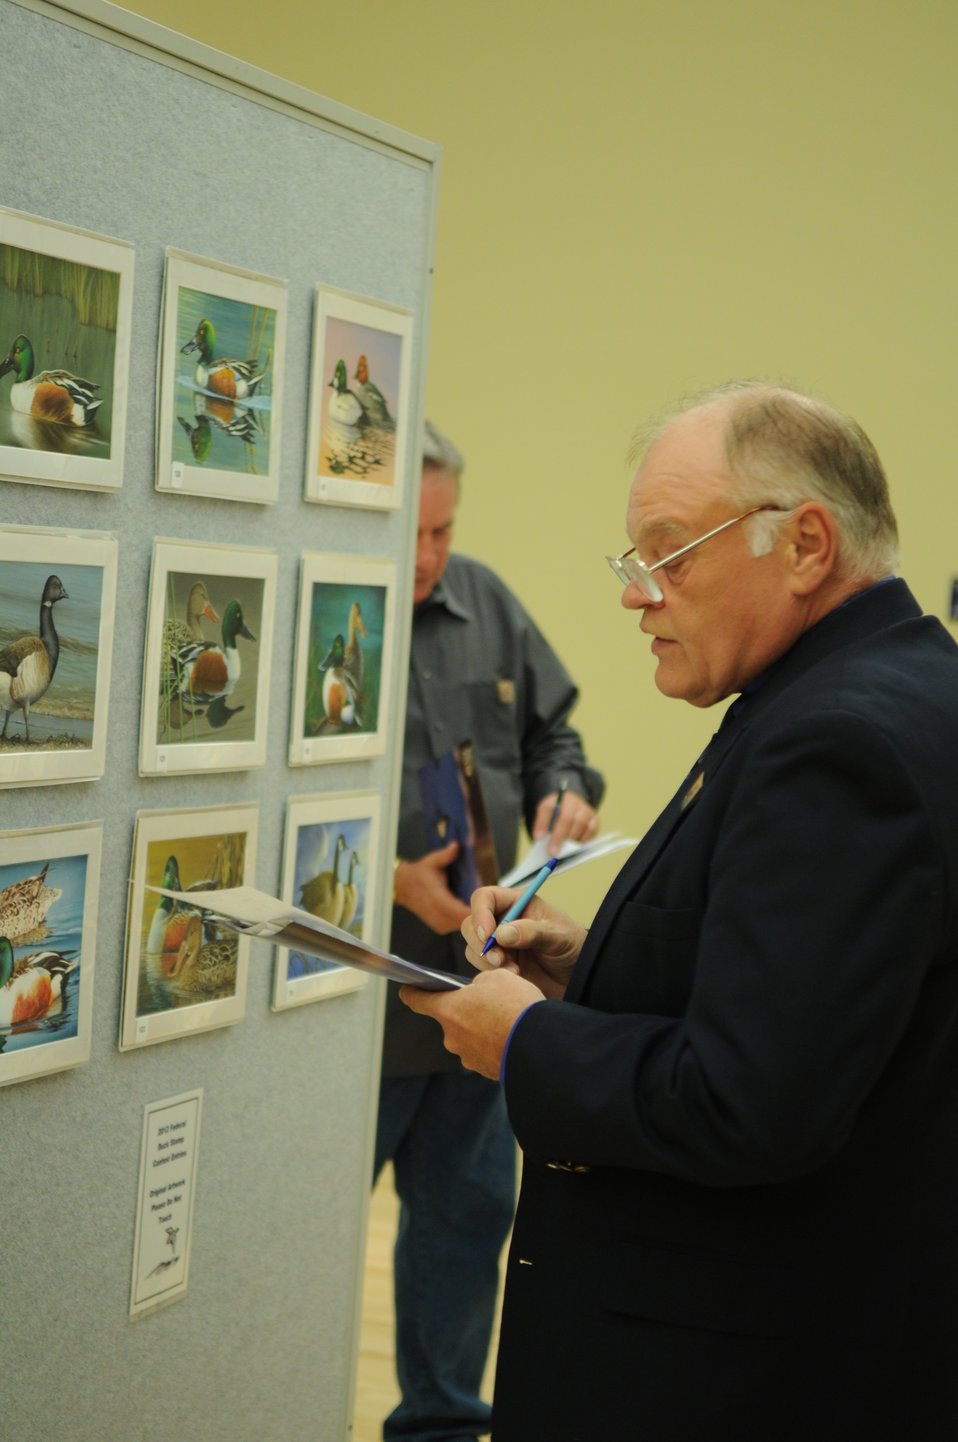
Judging

The U.S. Fish & Wildlife Service sponsored the 2012 Federal Duck Stamp Art Contest September 28 and 29 in Ogden, Utah, at Weber State University. A panel of five judges was responsible for choosing the art work used to design the 2013-2014 Migratory Bird Hunting and Conservation Stamp.